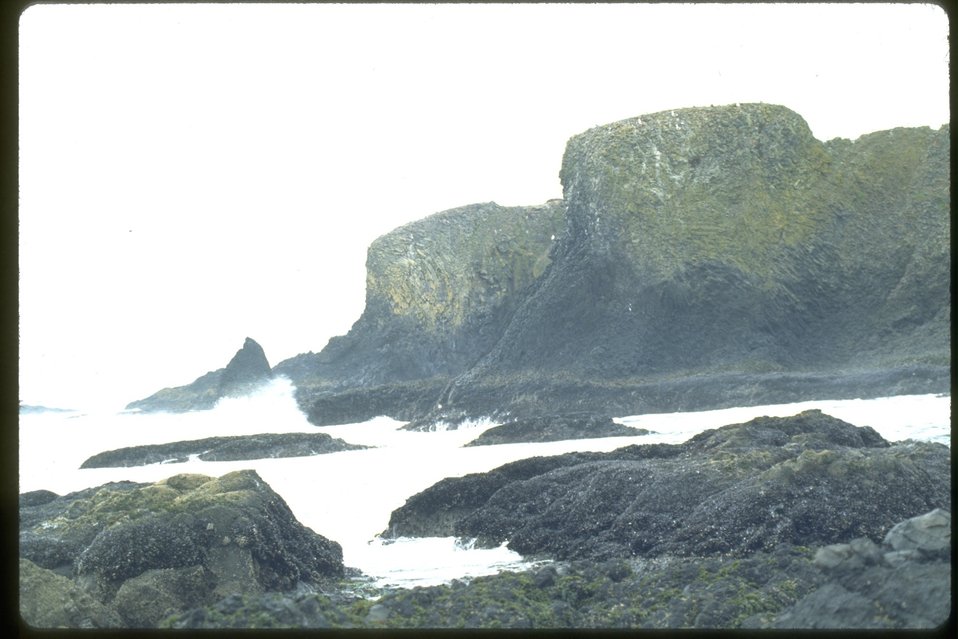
Cobble Beach tidepools with Lions Head Rock near Yaquina Head.